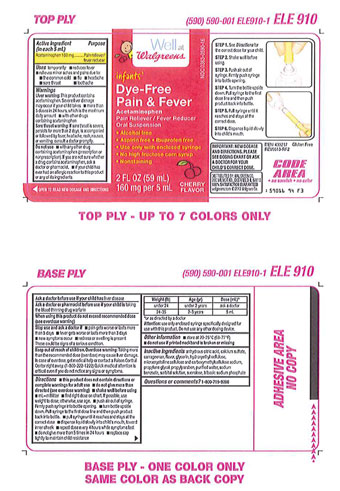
Recalled - Acetaminophen infant suspension liquid

November 1, 2013 – Product Recall – Perrigo Initiates Nationwide Voluntary Product Recall of Acetaminophen Infant Suspension Liquid, 160 Mg/5 Ml, Due to a Potential Defect with the Co-packaged Oral Syringe.